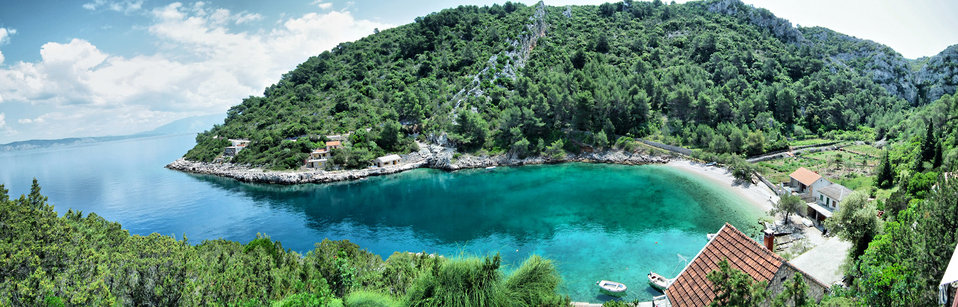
Beach paradise poster top high resolution.